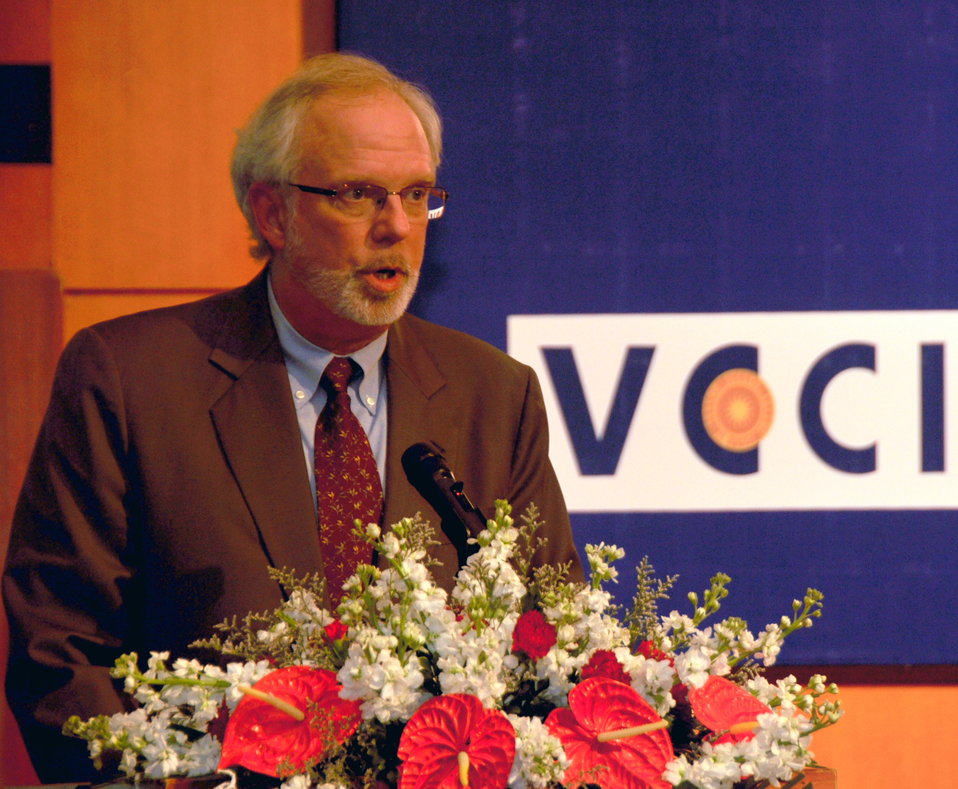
U.S. Ambassador David Shear speaks at Disabilities Program Launch

Hanoi, April 17, 2013